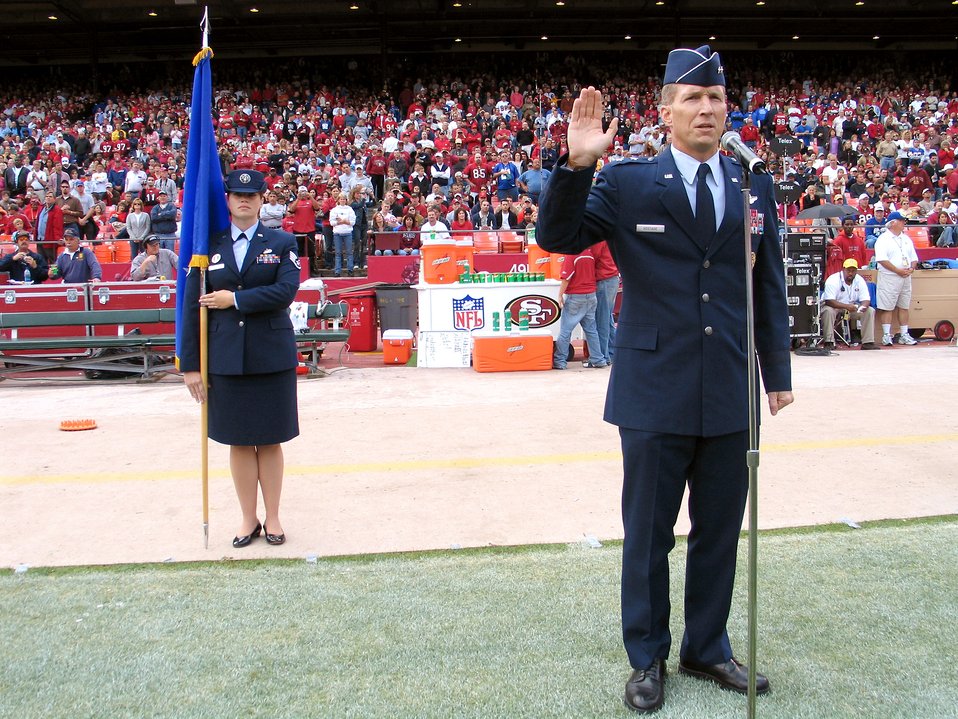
Swearing-in

SAN FRANCISCO, Calif. (AFPN) -- Maj. Gen. Gilmary Michael Hostage III officiates an Air Force swear-in ceremony at a San Francisco 49ers halftime show here Nov. 6. Staff Sgt. Valerie Gordon, holds the two-star general flag behind him. The general is the director of operations at Air Education and Training Command, Randolph Air Force Base, Texas. Sergeant Gordon is with the 364th Recruiting Squadron recruiter.